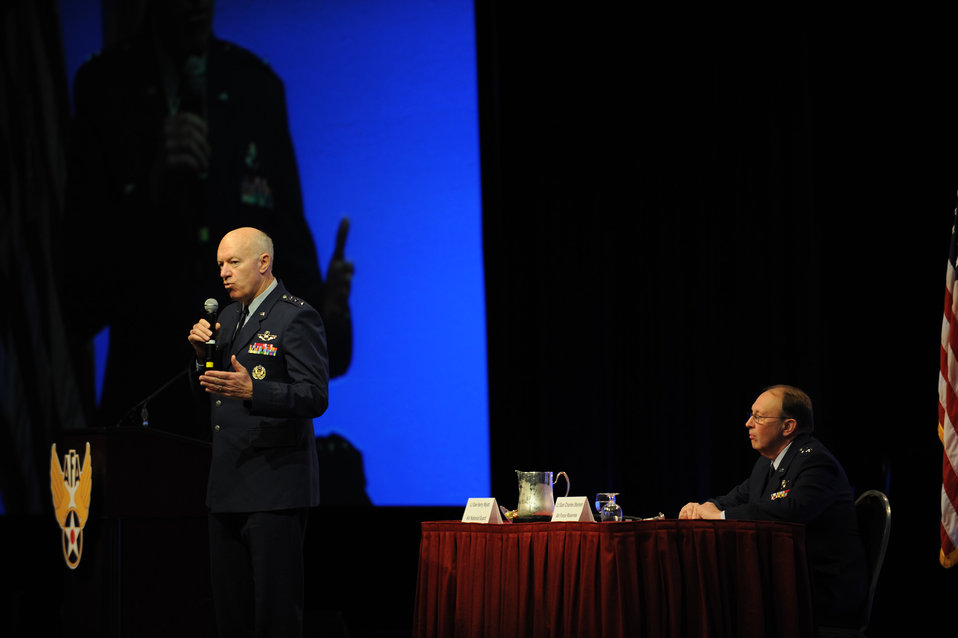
Generals discuss Guard, Reserve, on call Air Force

Lt. Gen. Charles E. Stenner Jr. and Lt. Gen. Harry M. Wyatt III speak about Reserve and Guard components during the Air Force Association's Air Warfare Symposium and Technology Exposition Feb. 19, 2010, at the Rosen Shingle Creek Hotel in Orlando, Fla. General Stenner is the Air Force Reserve Command commander, and General Wyatt is the Air National Guard director.